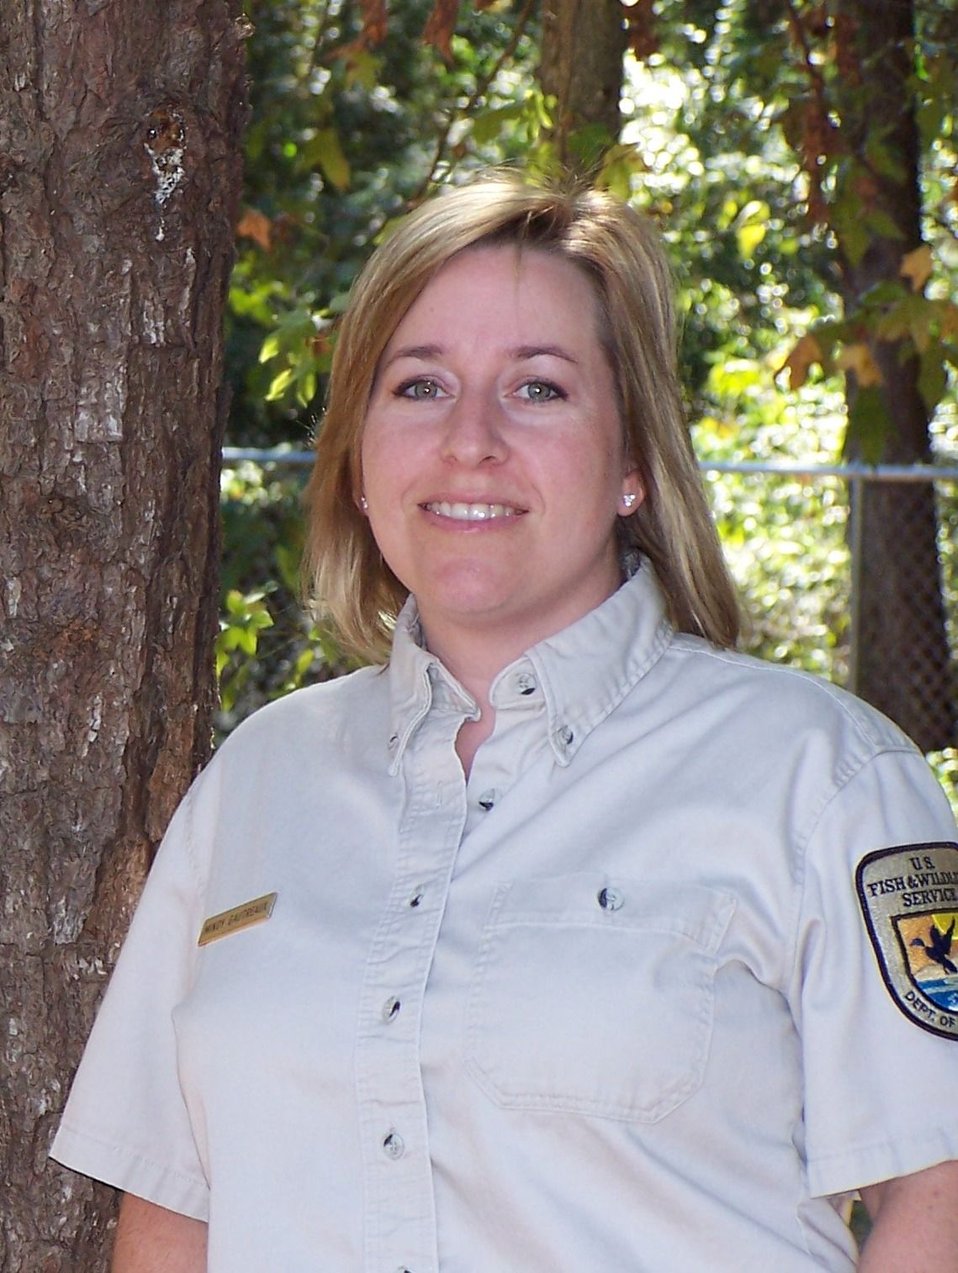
Mindy Gautreaux, deputy manager at Okefenokee National Wildlife Refuge in Georgia, says her gran Jane Wilson, together with her grandfather Clyde Wilson, shared a love of nature with her and greatly influenced the person she is today.